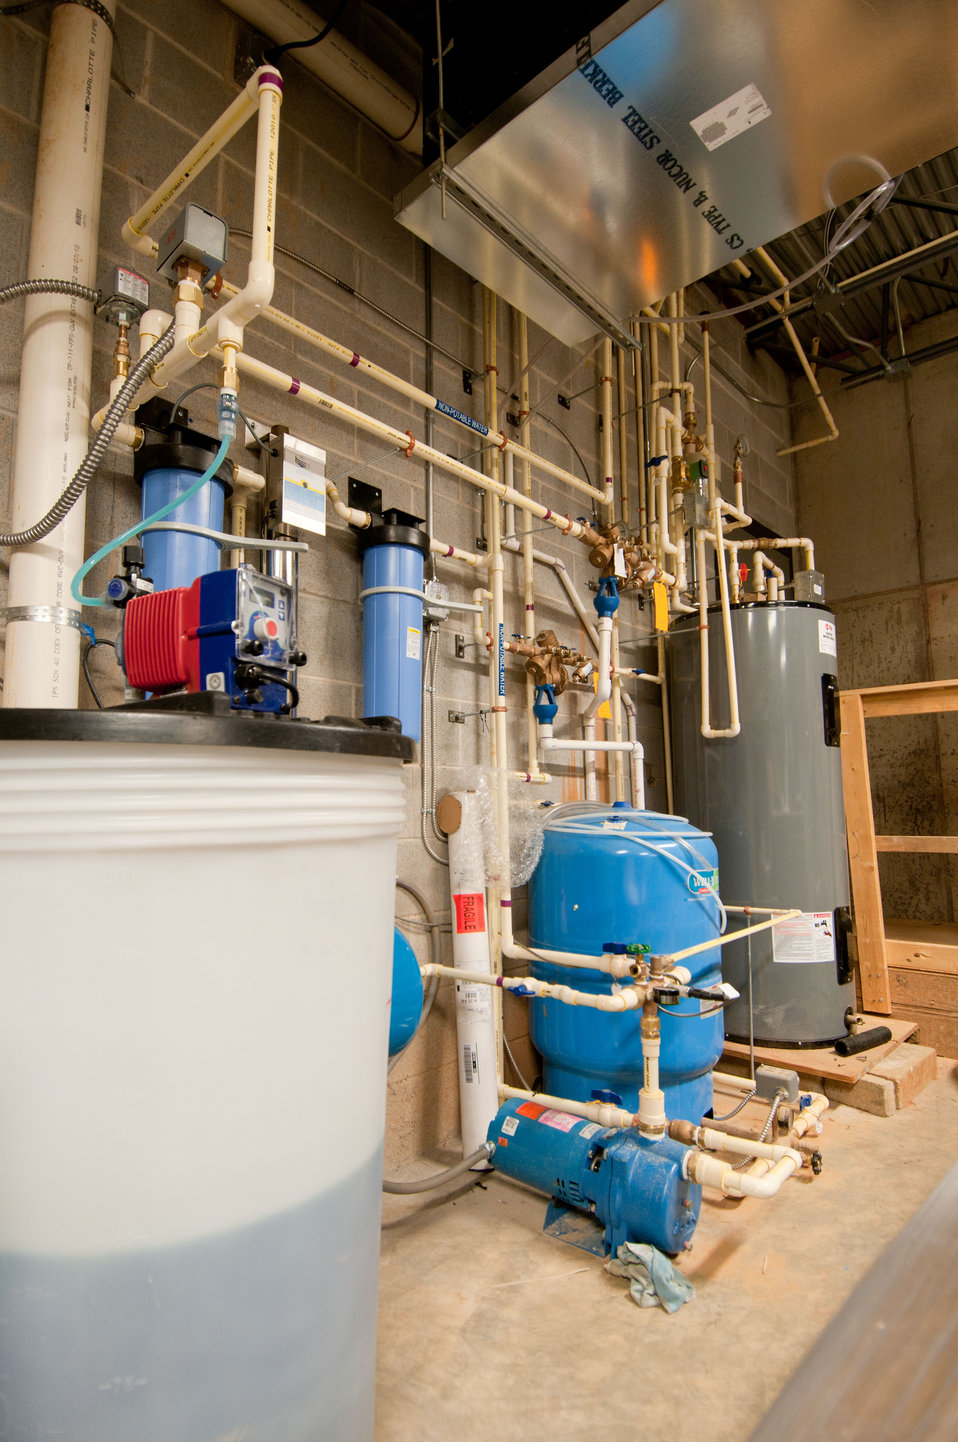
The water treatment system at Cooper Vineyards in Louisa, VA, the first winery on the East Coast and the second in the country to be awarded the fourth and highest, Platinum certification by Leadership in Energy and Environmental Design (LEED).
From a Virginia Wine Board Marketing Office press release, “The process of building a LEED platinum certified building was initially more expensive and arduous than co-owners, Jacque Hogge, MD and Geoffrey Cooper, MD expected, but they were able to get financial assistance from the United States Department of Agriculture. “Know that there are grants available to help with the costs of sustainable building projects,” Hogge advises to other potential green wineries. Cooper Vineyards received 2 of the 3 USDA (U.S. Department of Agriculture Rural Development (RD) Rural Energy Financing program) grants awarded in Virginia in 2010 to help with the expenses of their construction.”
Rural Energy Financing program focuses on loan guarantees, loans and grants to agricultural producers, businesses, cooperatives and rural residents for renewable energy systems and to make energy efficiency improvements.
The tasting room and building collects rainwater from the roof; uses low flow water fixtures to reduce usage by 40%; utilizes structurally insulated panels for the roof and walls; heats and cools the entire building using a geothermal system that includes pipes that are embedded in the parking lot; low-voltage LED lighting with daylight and occupancy sensors provide ample light when it is needed; a solar panel array provides more than 15% of the energy needs for the building, and much of the construction materials are from local and recycled material sources. For more information about USDA please go to www.usda.gov, Rural Development and Rural Energy Financing. LEED was developed by the U.S. Green Building Council (USGBC) is a 501 c3 non-profit organization committed to a prosperous and sustainable future for our nation through cost-efficient and energy-saving green buildings.